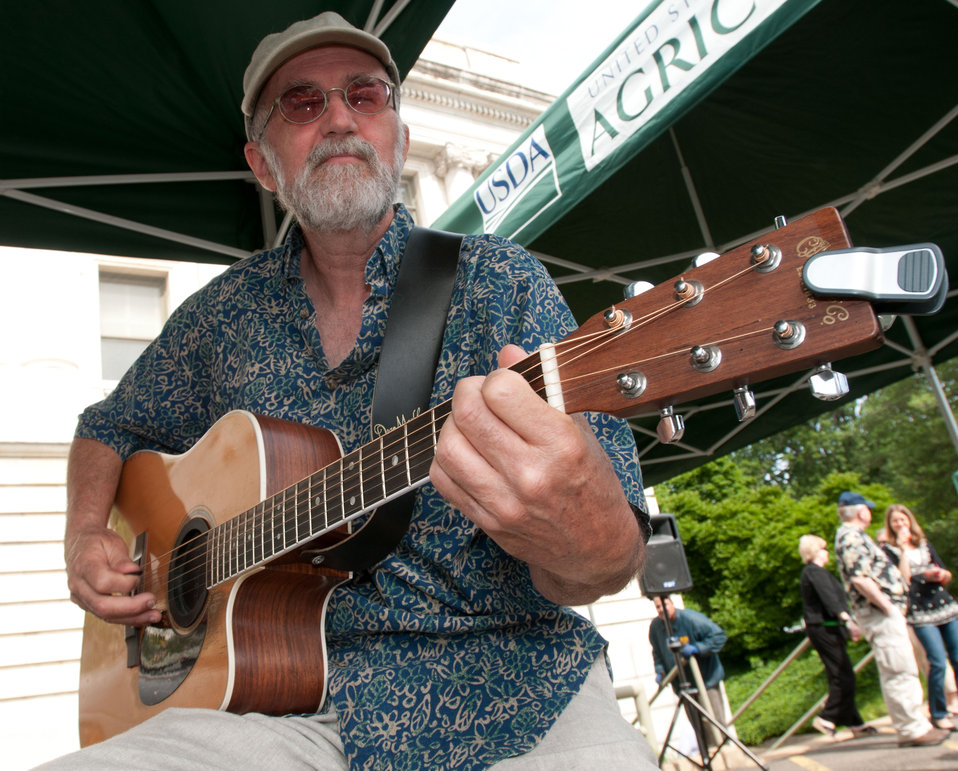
Dave Hartge played music outside the Whitten Building at the 16th season of the U.S Department of Agriculture (USDA) Farmers Market on Friday, Jun 3, 2011 in Washington, DC. The USDA Farmers Market is located at the corner of 12th Street and Independence Avenue and will be open every Friday from 10:00 a.m. - 2:00 p.m. through November 18th. Special events will be happening every Friday at the market and at the adjacent People's Garden all season.